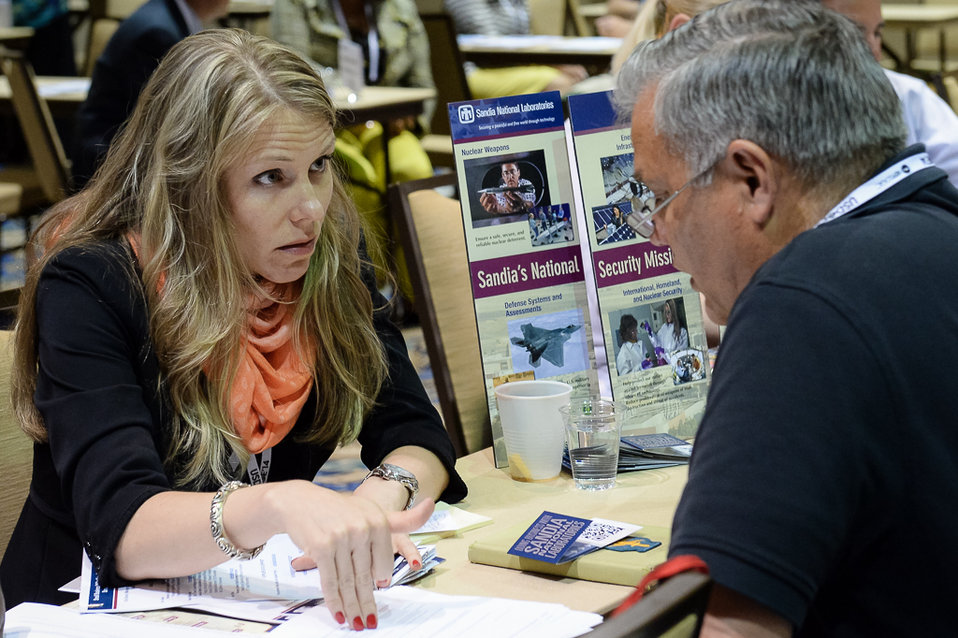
OSDBU Conf 3